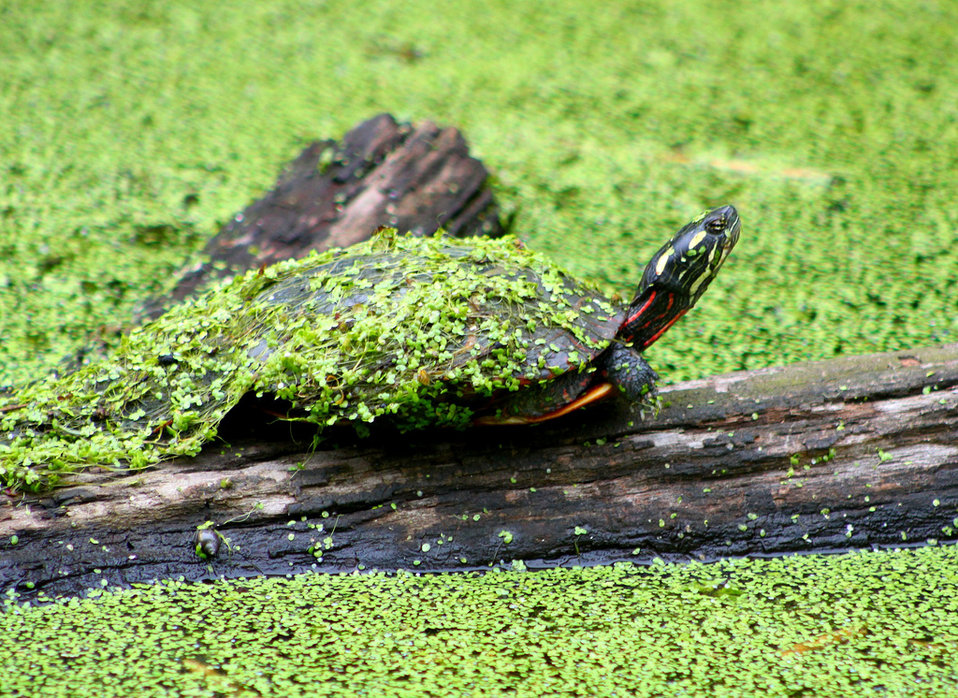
May

eastern painted turtle
John Heinz National Wildlife Refuge, PA